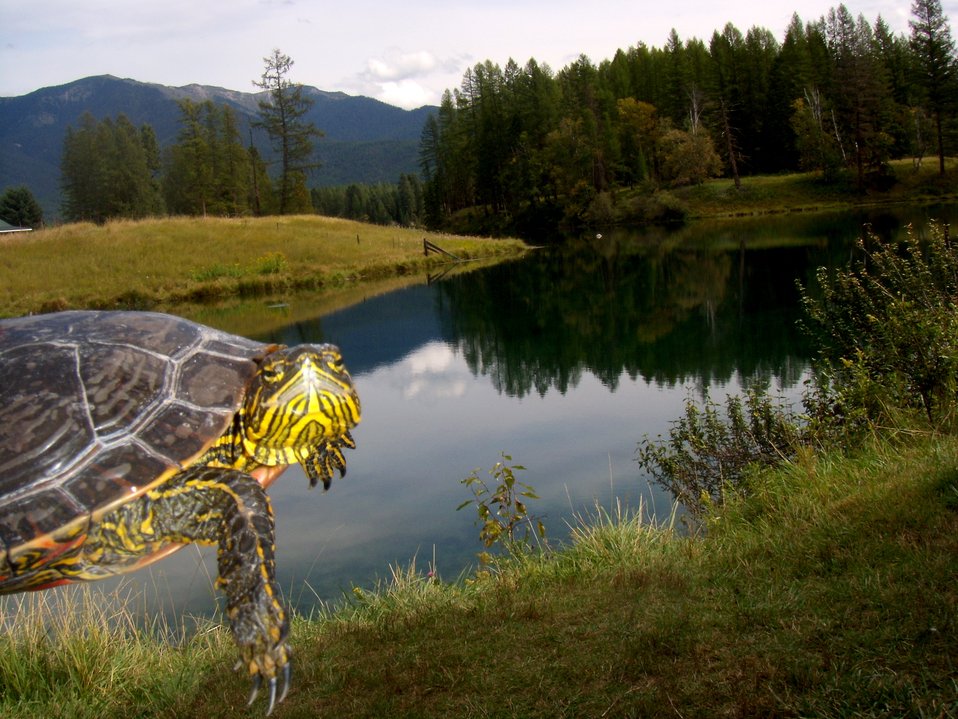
Pondzie the Turtle Loves Creston National Fish Hatchery

This Montana painted turtle is not so sure about getting back into the Jessup Mill Pond after he was found on the road.

Creston National Fish Hatchery

Evie Bradley / USFWS

Photo Contest Entry #87